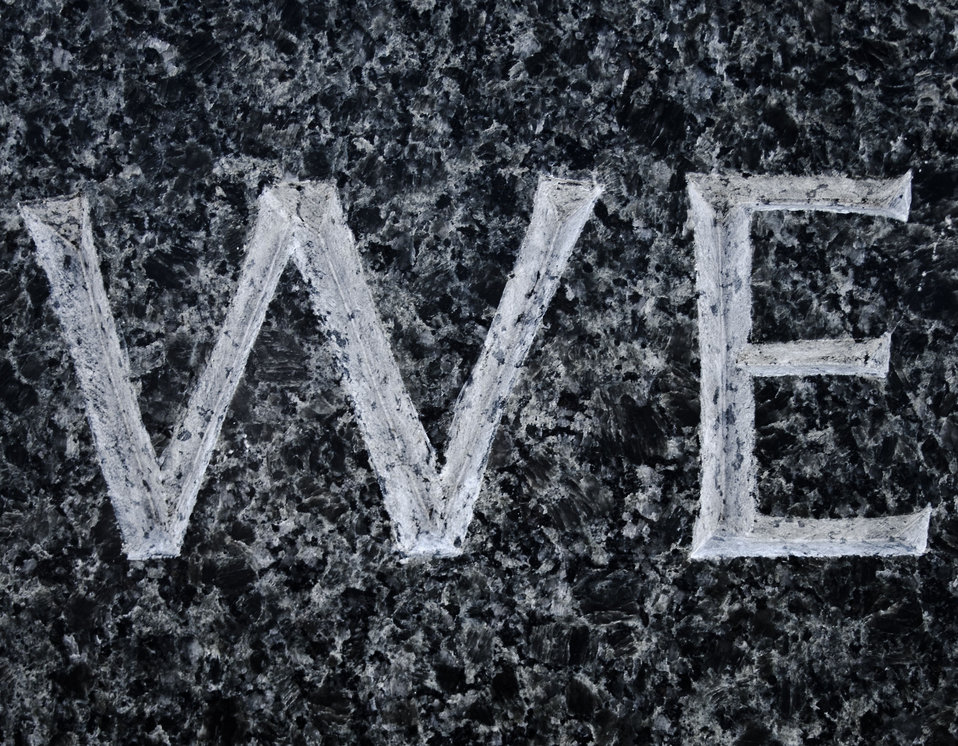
Martin Luther King, Jr. Memorial in Washington, DC, on Saturday, October 8, 2011.